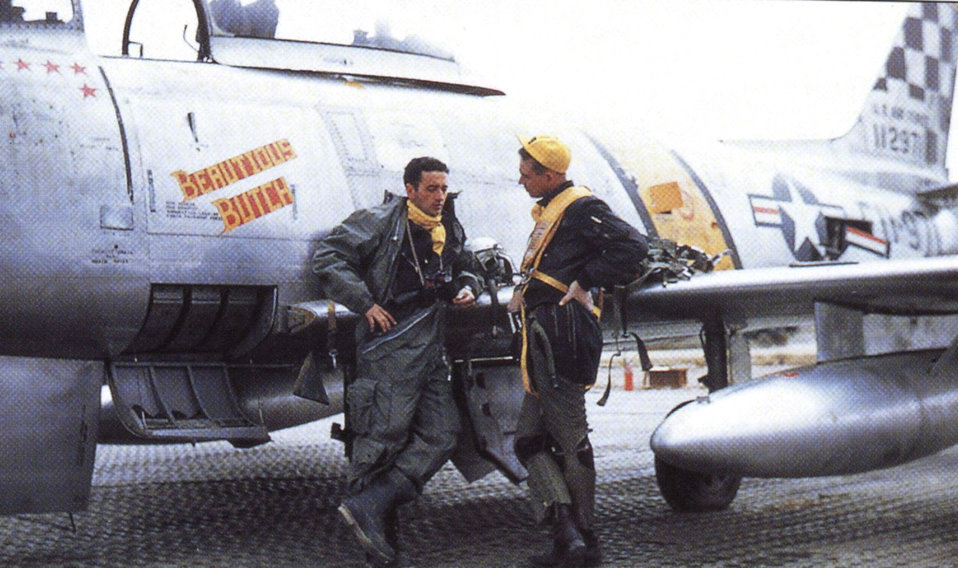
Aces of the 51st Fighter Wing

Capts. Joseph McConnell Jr. and Harold Fischer stand before Captain McConnell's F-86 Sabre jet,